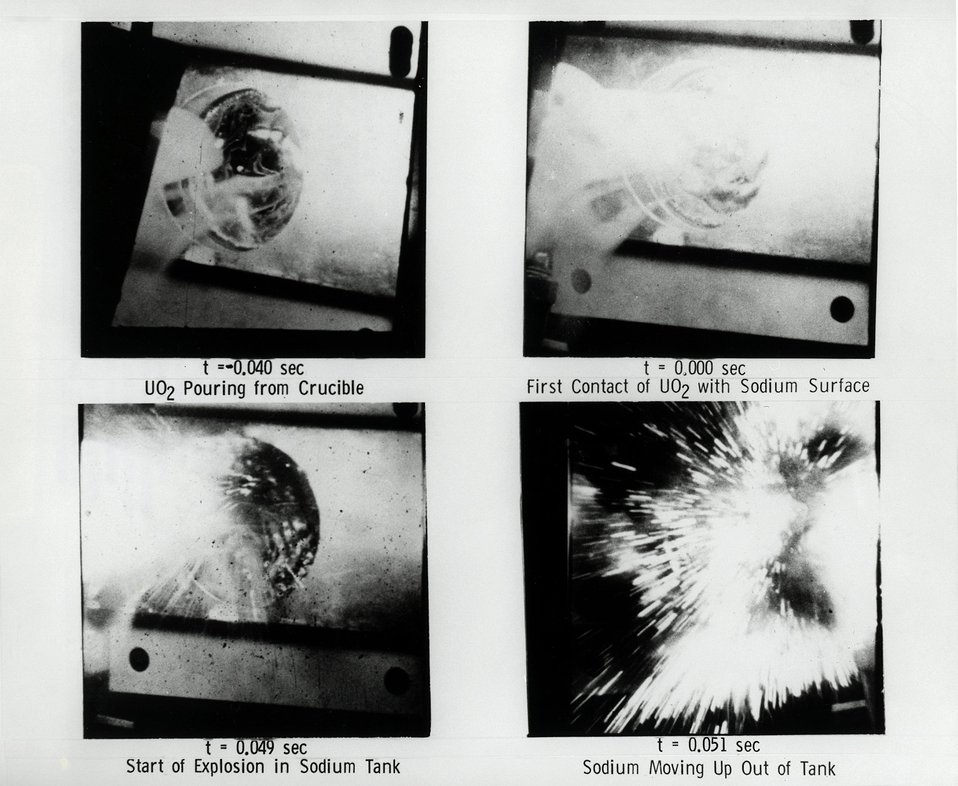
The sequence pictures taken at the moment of the dropping of 13 grams of molten uranium oxide into a tank of 280 grams liquid sodium at 394 degrees C.
c.1972